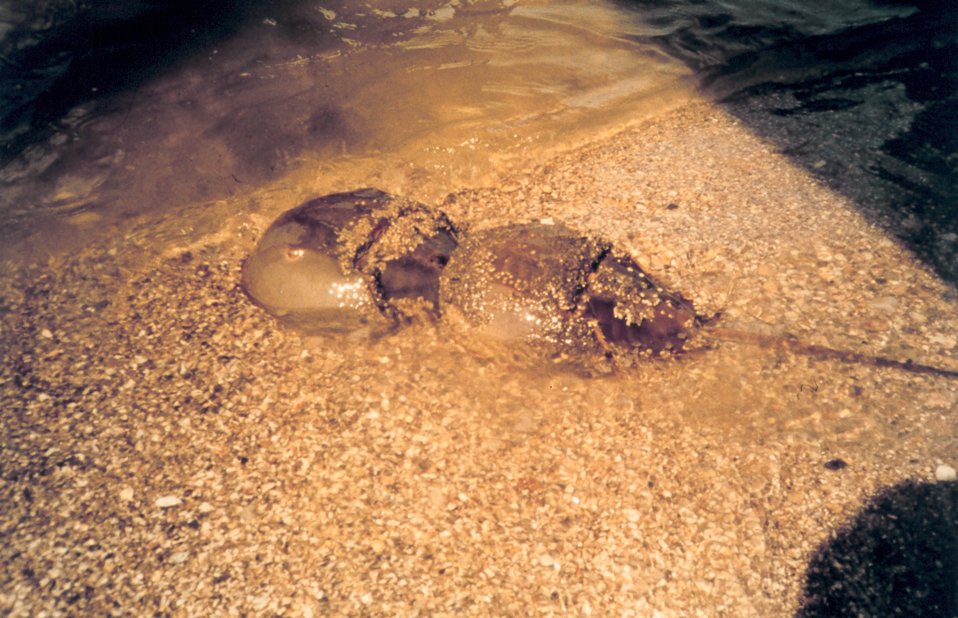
Mating pair of horseshoe crabs